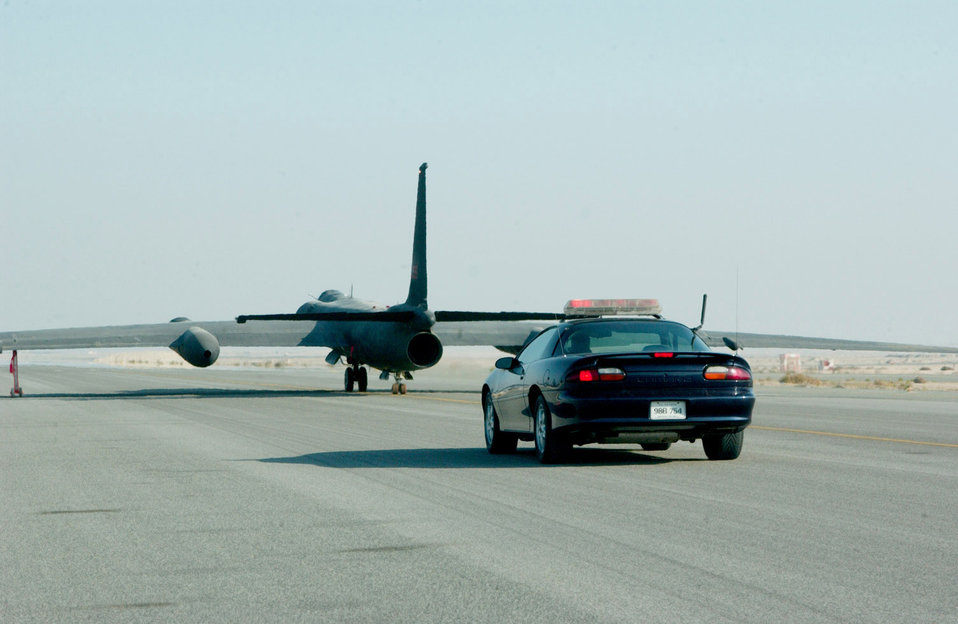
Chasing a Dragon Lady

SOUTHWEST ASIA -- A Chevrolet Camaro Z-28 chases a U-2 Dragon Lady down the runway here. Because of visibility limitations when on the ground, U-2 pilots rely on the driver in the car to provide information during takeoffs and landings.